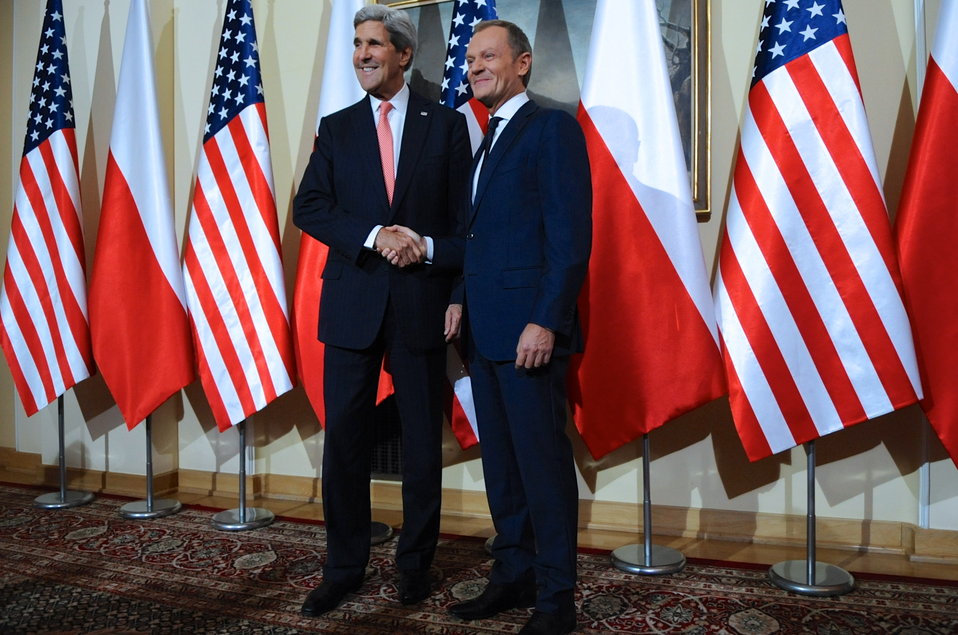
Secretary Kerry Shakes Hands With Polish Prime Minister Tusk

U.S. Secretary of State John Kerry shakes hands with Polish Prime Minister Donald Tusk before they meet at the Chancery in Warsaw, Poland, on November 5, 2013.